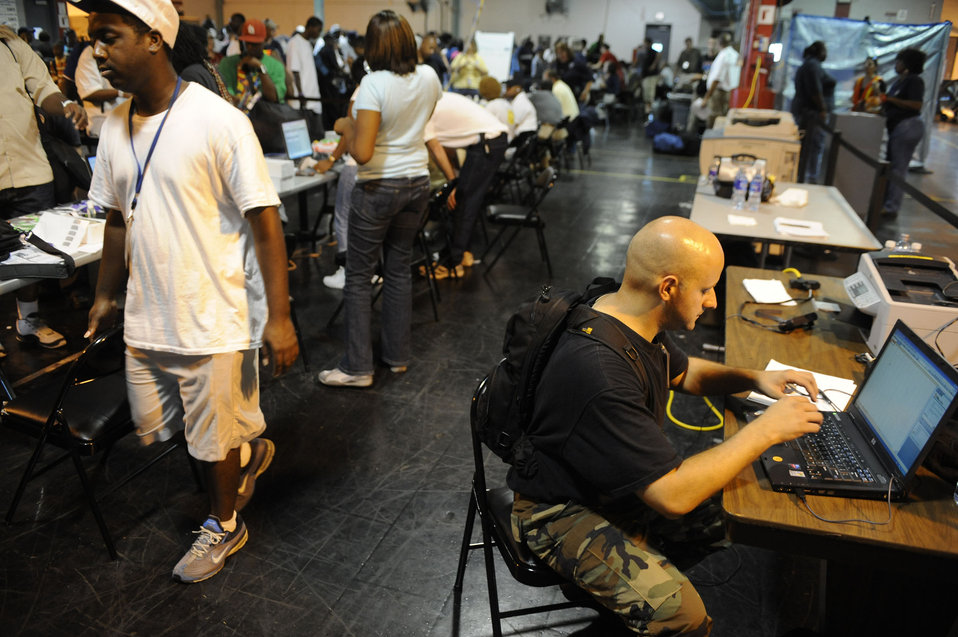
Airmen there as hurricane evacuation begins

Staff Sgt. Elvin Cortes inputs the weights of luggage as evacuees leaving before Hurricane Gustav hits the Gulf Coast prepare to depart the Louis Armstrong International Airport in New Orleans Aug. 30. They will be boarding flights officials with the Federal Emergency Management Agency and Department of Defense have chartered to transport citizens who otherwise could not leave on their own to destinations safely outside the hurricane's path. Sergeant Cortes is from the 615th Contingency Response Wing at Travis Air Force Base, Calif.